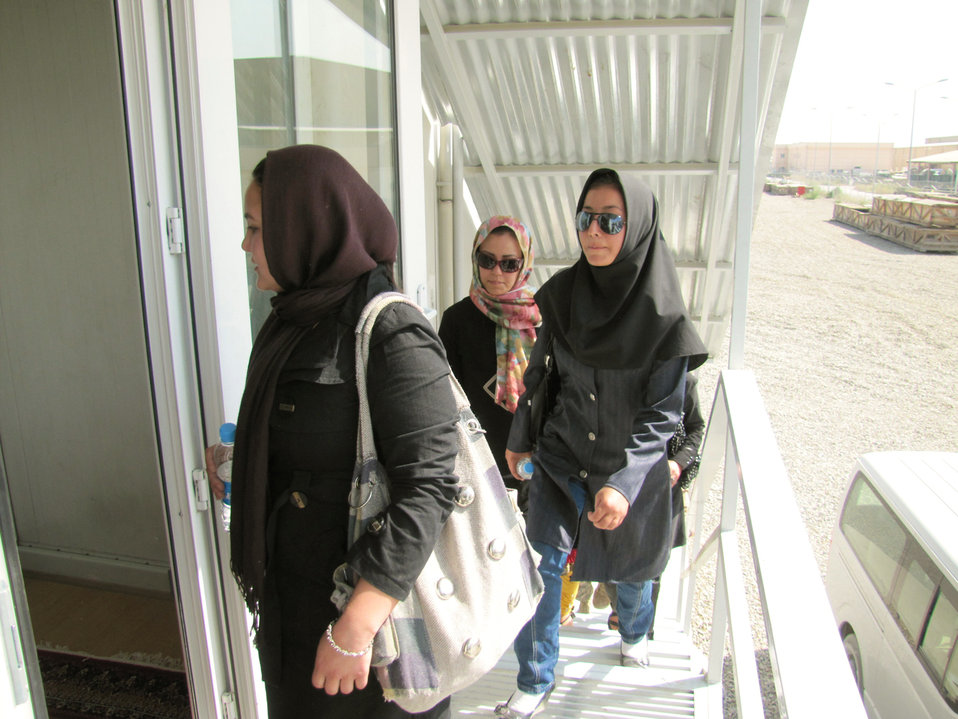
New Afghan air force female lieutenants arrive at the Thunder Lab

Five newly commissioned female Afghan lieutenants arrive Oct. 12, 2010, at the Thunder Lab in Kabul, Afghanistan.